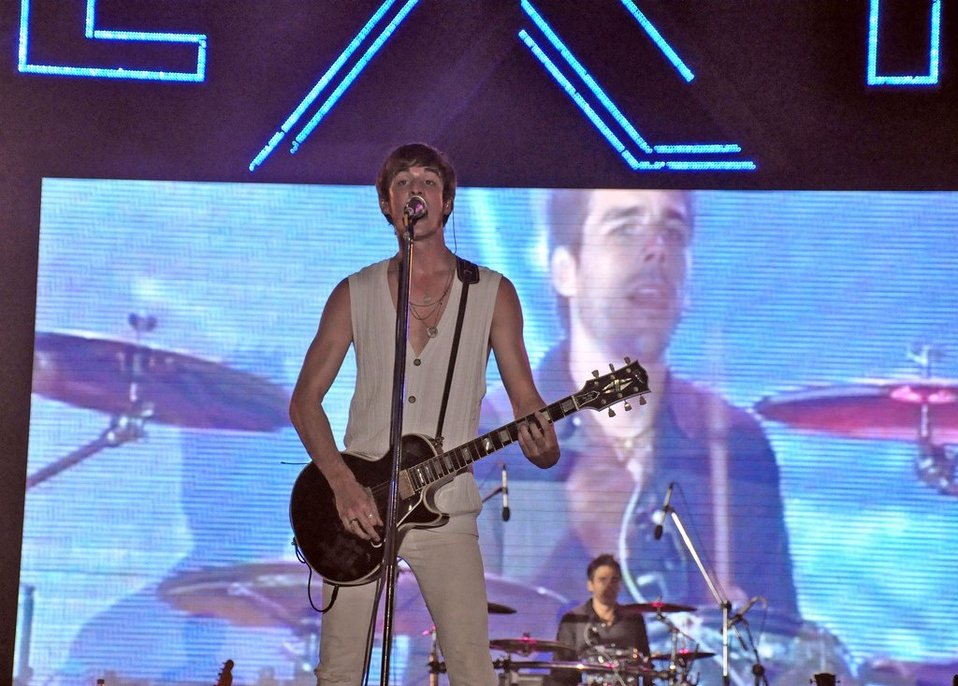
USAID, MTV EXIT concert series in Vietnam, 2010.

The Click Five performs in Ho Chi Minh City on April 17 as part of the USAID, MTV EXIT concert series.